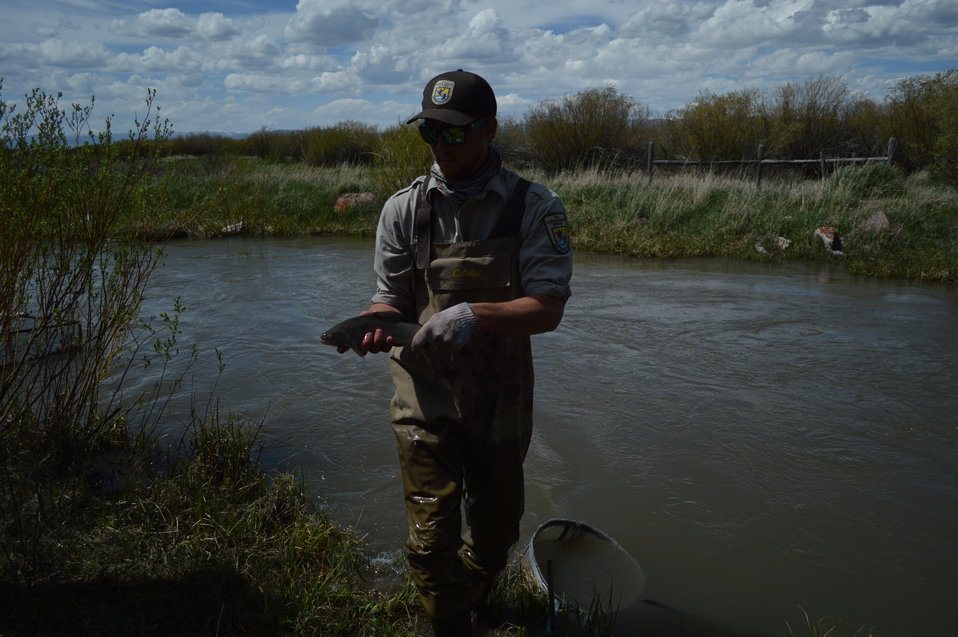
Regional Leadership Visit to Montana 2014